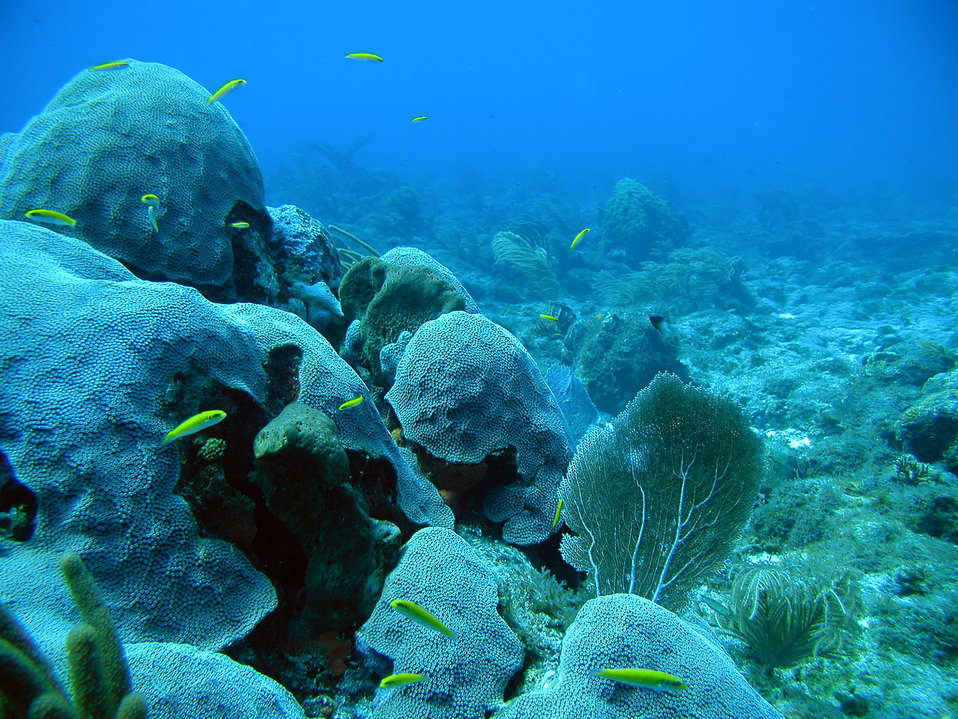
Bluehead (Thalassoma bifasciatum)